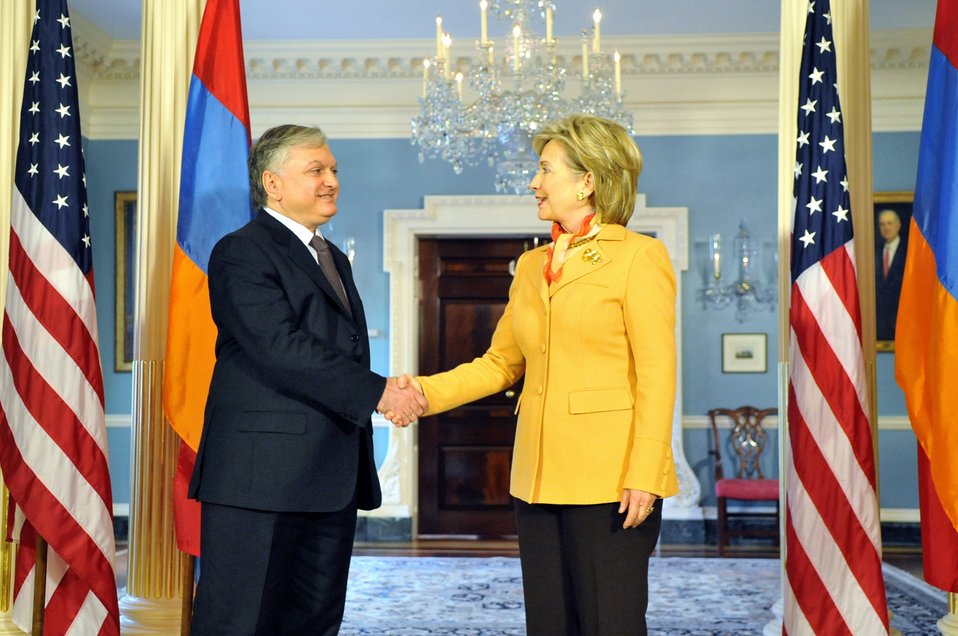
Secretary Clinton Meets With Armenian Foreign Minister

U.S. Secretary of State Hillary Rodham Clinton hosts a bilateral meeting with Armenian Foreign Minister Edward Nalbandian in the Treaty Room of the U.S. Department of State in Washington, DC May 5, 2009.